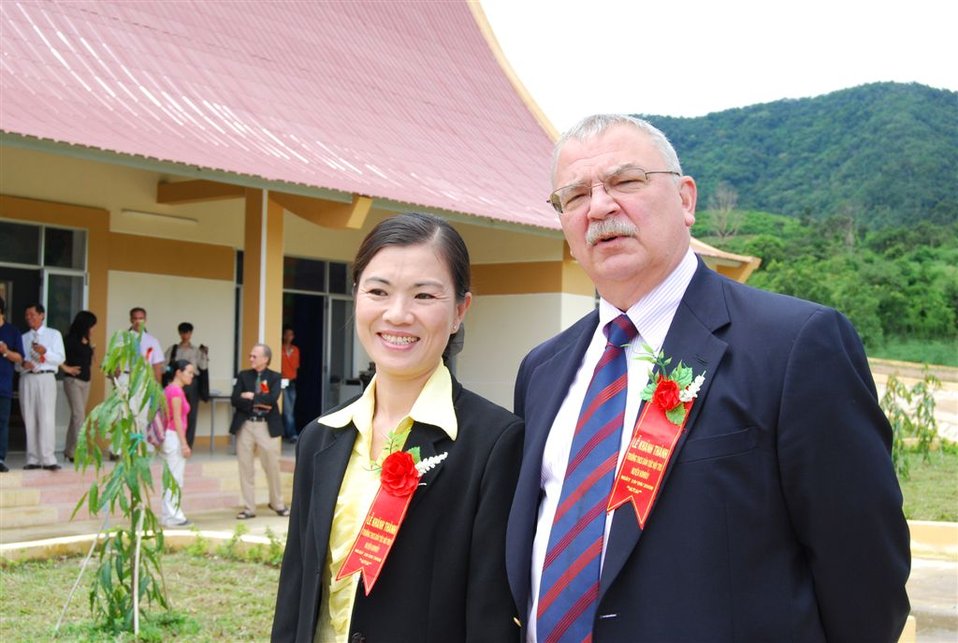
Ambassador Michael Michalak and Truong Thi Ngoc Anh meet with students at the Kon Ray School